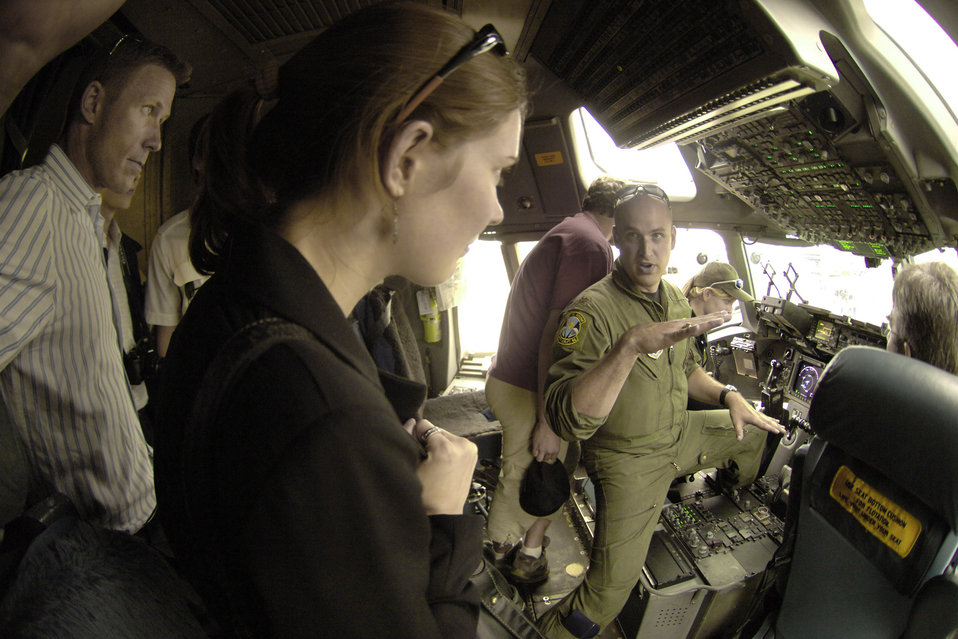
Airmen, aircraft on display at Paris Air Show

Maj. Chuck Perreault talks with Luzia Billeter of Switzerland about the C-17 Globemaster III's capabilities during the Paris Air Show 2009 June 18 at Le Bourget, France. The aircraft and crew are assigned to the 15th Airlift Squadron from Charleston Air Force Base, S.C. Major Perreault is a C-17 aircraft commander.